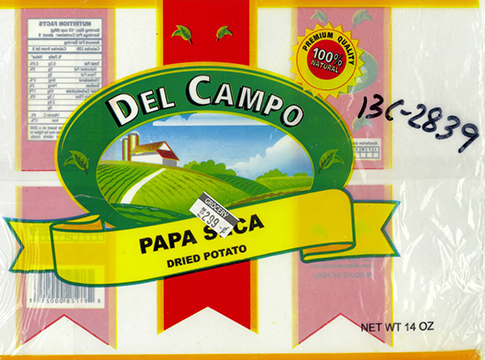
RECALLED – Del Campo Papa seca / DRY POTATO 24x14 oz.

December 13, 2013 – Product Recall – Megabusiness LLC Issues Alert on Undeclared Sulfites in Del Campo Papa Seca / DRY Potato 24x14 oz.